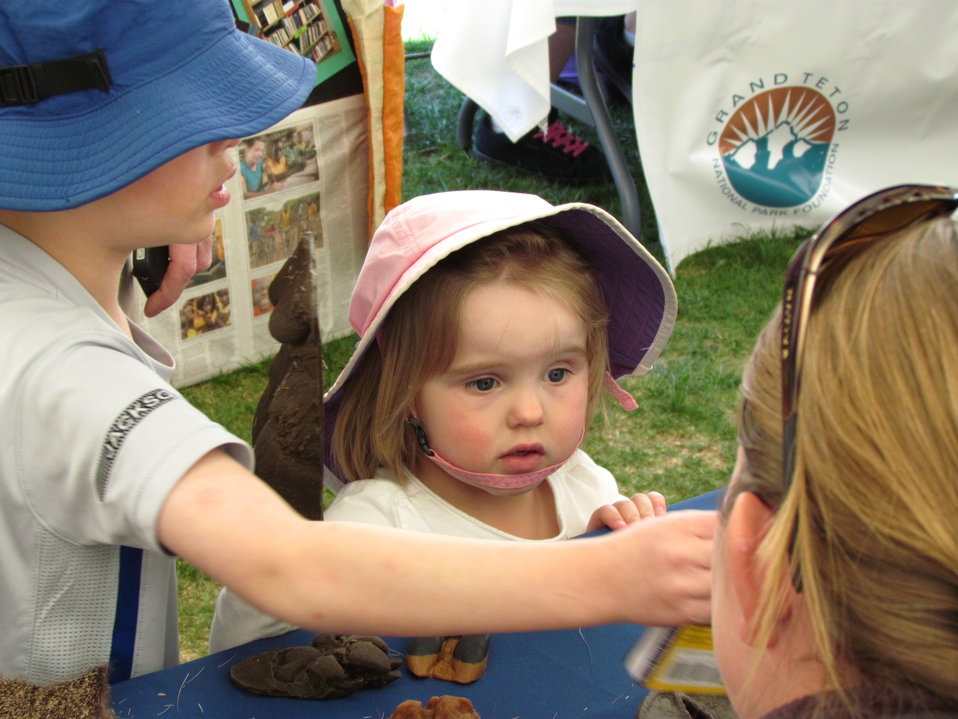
A Toddler's Attention

A pair of young siblings stop by the National Elk Refuge's educational booth at Jackson, Wyoming's EcoFair in Powderhorn Park.

Credit: USFWS / Steve Miller, National Elk Refuge volunteer